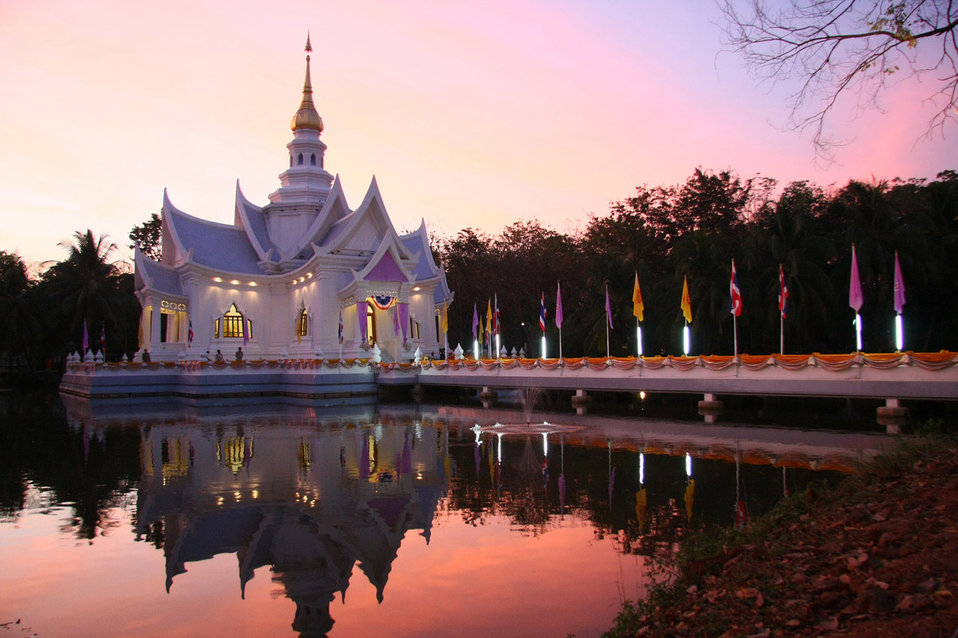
Meditation hall at night

This is one of the most beautiful buildings in the monastery.